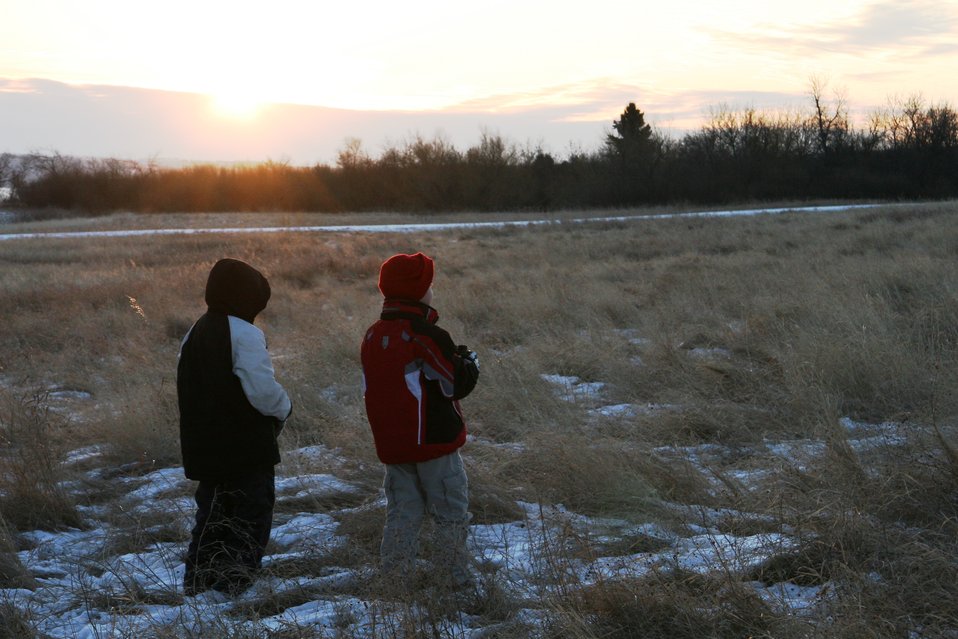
Sunrise during CBC4kids

Beautiful morning for a bird walk!